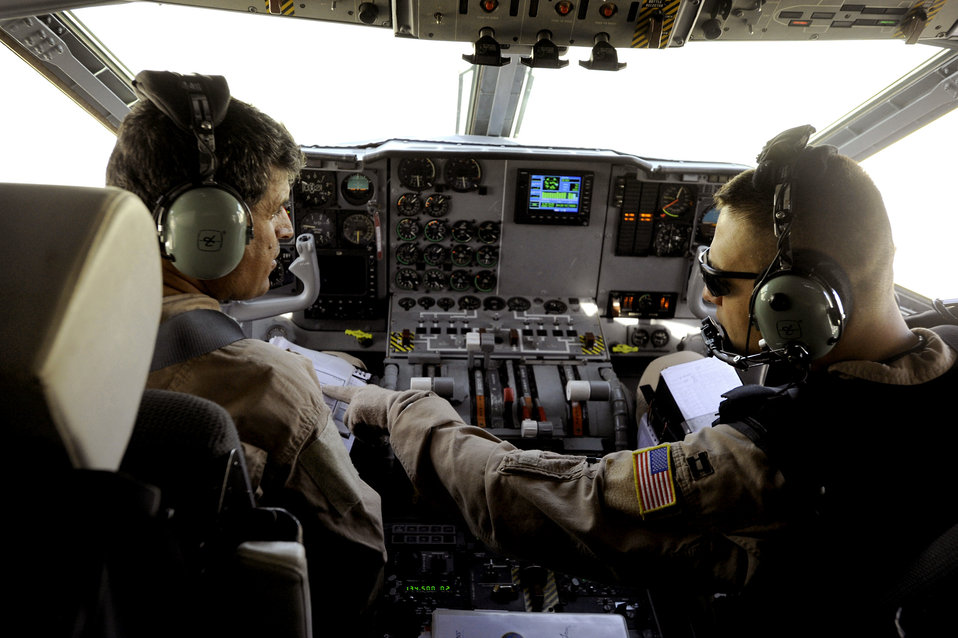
Operation Enduring Freedom

Capt. Larry Needham (right) goes over preflight checklist items with Capt. Mohammad-Shah Ahmadzai prior to takeoff for an operational mission May 15, 2010, at Kabul International Airport, Afghanistan. Since November 2009, Combined Air Power Transition Force Airmen have been training Afghan C-27 Spartan pilots and loadmasters to conduct strategic and tactical airlift, airdrops and presidential support. Captain Needham is a C-27 pilot assigned to the 538th Air Expeditionary Advisory Squadron. Captain Ahmadzai is an Afghan National Army Air Corps C-27 pilot.